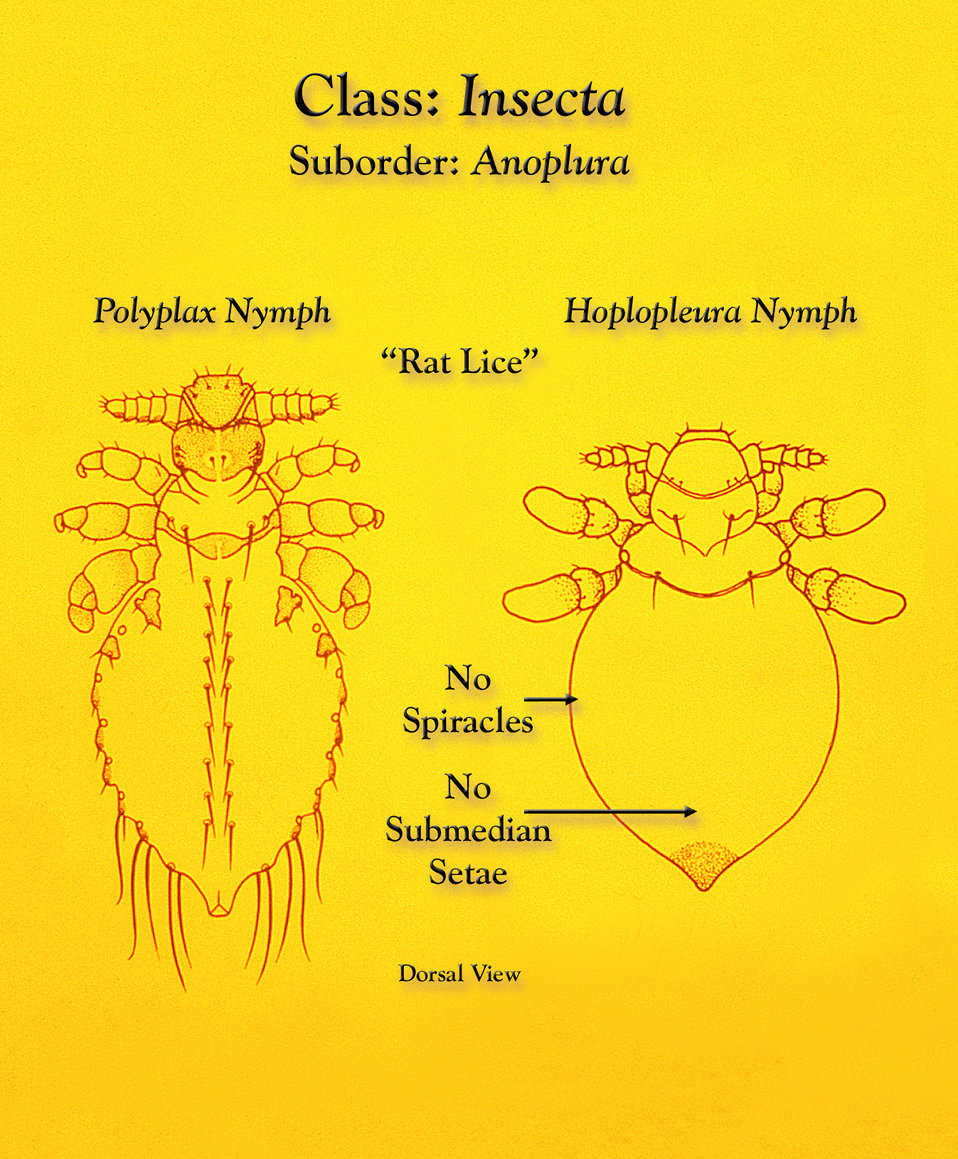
This illustration depicts the morphologic characteristics found to be displayed by Anopleural sucking lice members of the genera Polyplax and Hoplopleura during their nymphal stages.